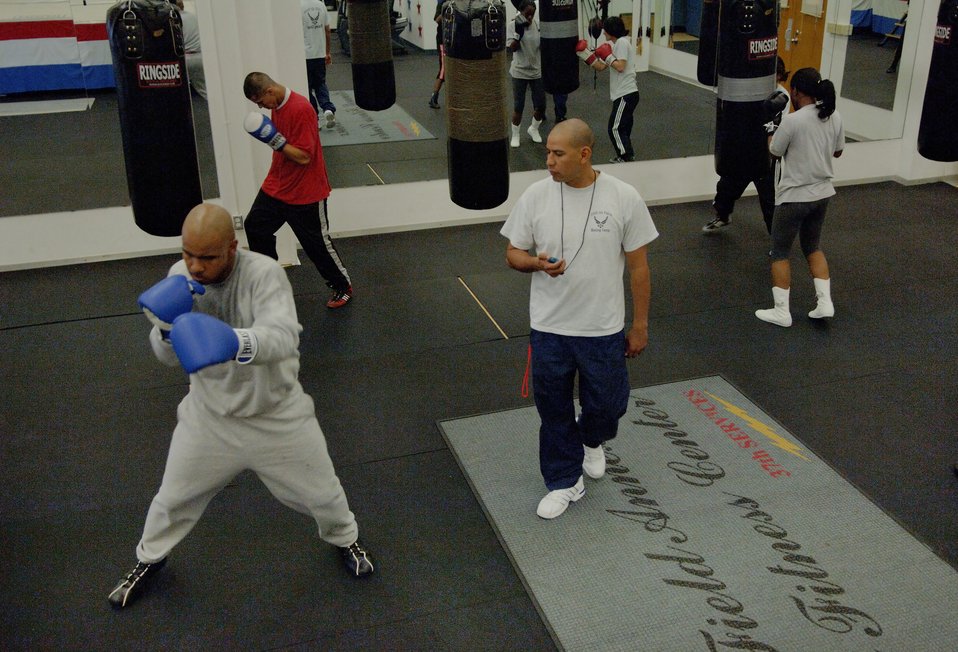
Boxing it out

SAN ANTONIO (AFPN) -- Airmen practice boxing drills while Tech. Sgt. Rudy Moreno (middle), assistant coach, instructs them at the Air Force Boxing Training Camp. Twenty-four Airmen are trying out for the nine spots to represent the Air Force at the Armed Forces Tournament.